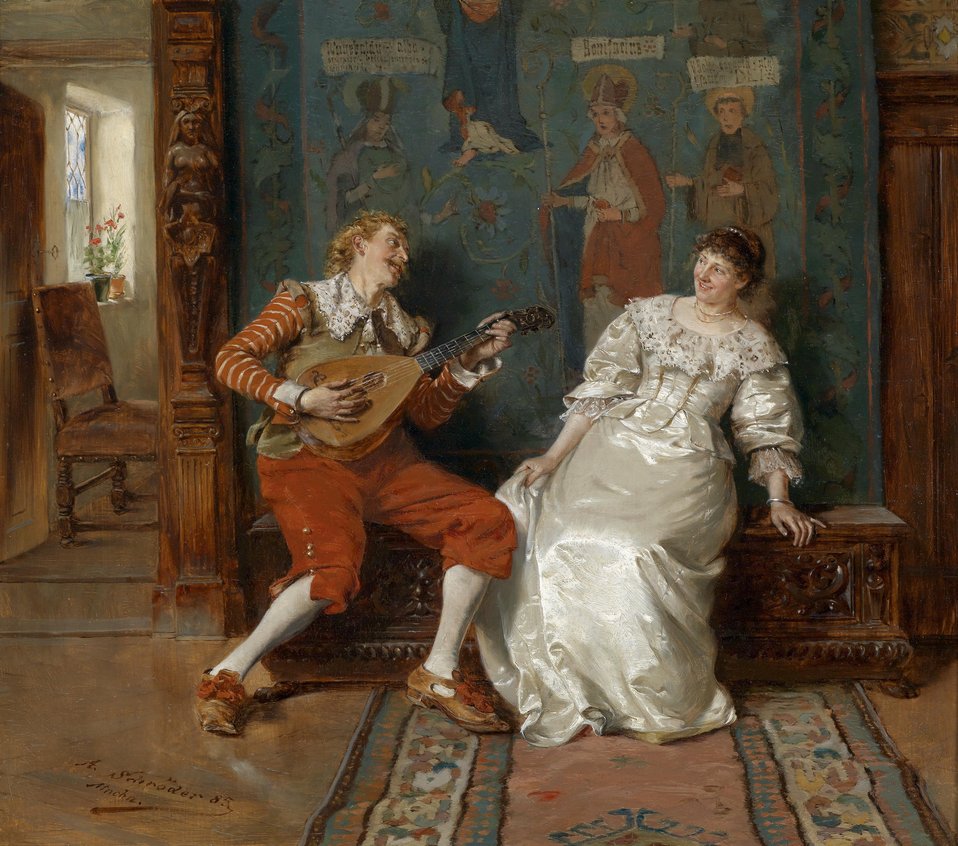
Musikalische Unterhaltung, signiert, datiert, bezeichnet A. Schröder (18)85, Mchn., Öl auf Holz, 36 x 41 cm